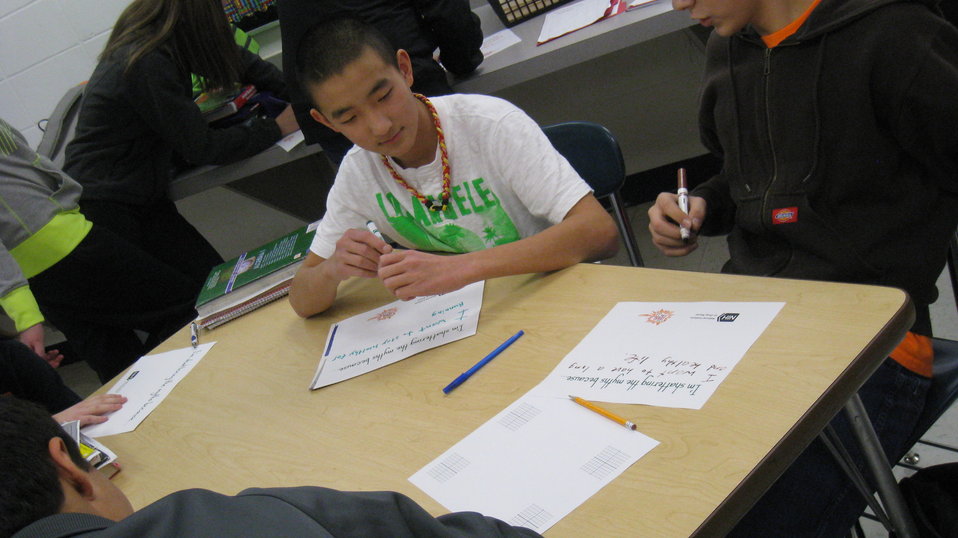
I'm Shattering the Myths Because...

Teenagers from the Van Buren County SAFE Coalition's, Youth Leadership Council (YLC) in Keosauqua, Iowa participate in various events during National Drug Facts Week, 2014.